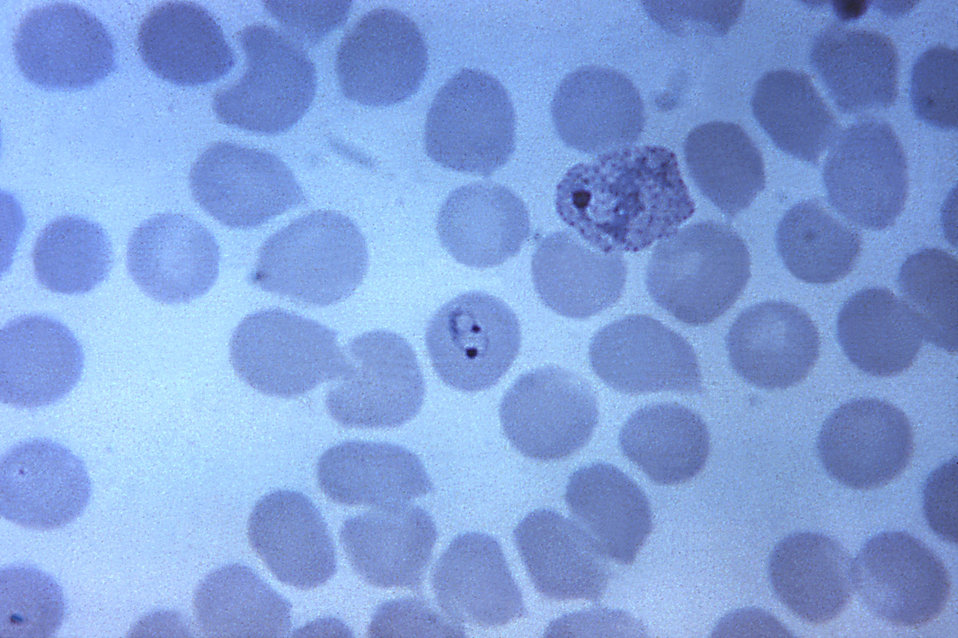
This thin film blood smear micrograph depicts a P. vivax ring with 2 chromatin dots; Magnified 1125X.